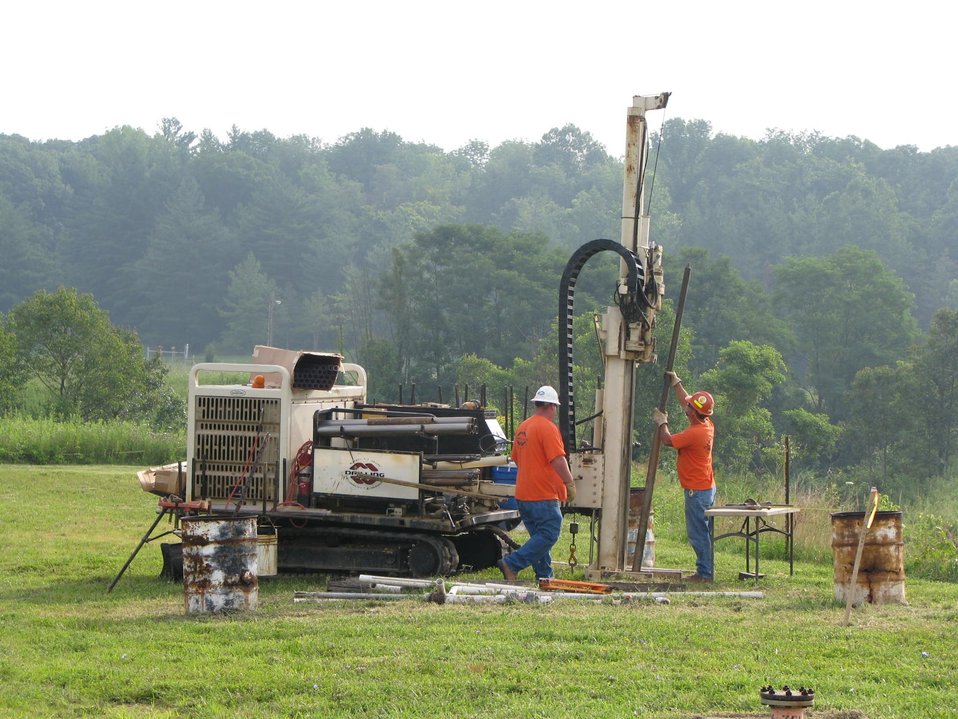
TCE Source Removal (soil samples)